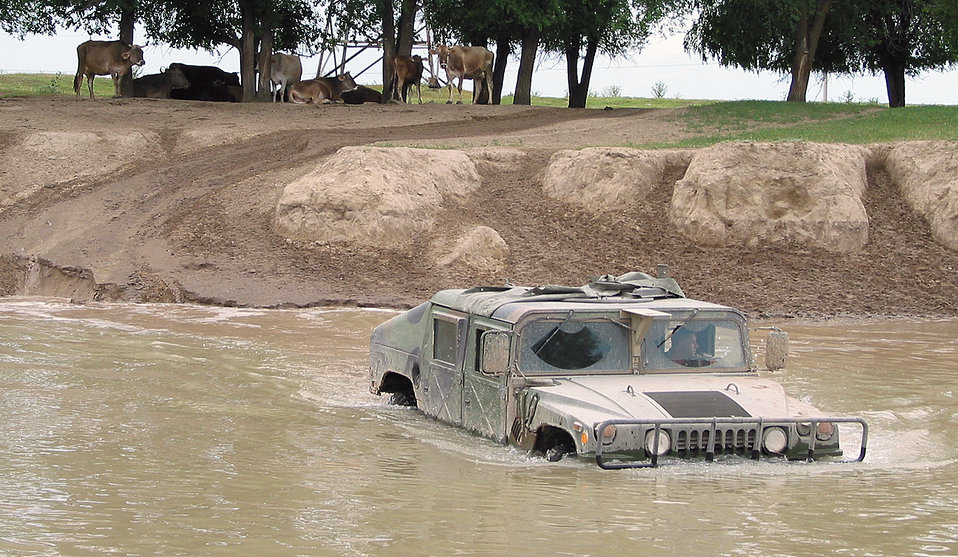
In deep

GANCI AIR BASE, Kyrgyzstan -- The 376th Expeditionary Security Forces Squadron is responsible for patrolling areas outside the perimeter of Ganci Air Base, Kyrgyzstan. The terrain is rough and Humvees are needed to get around.